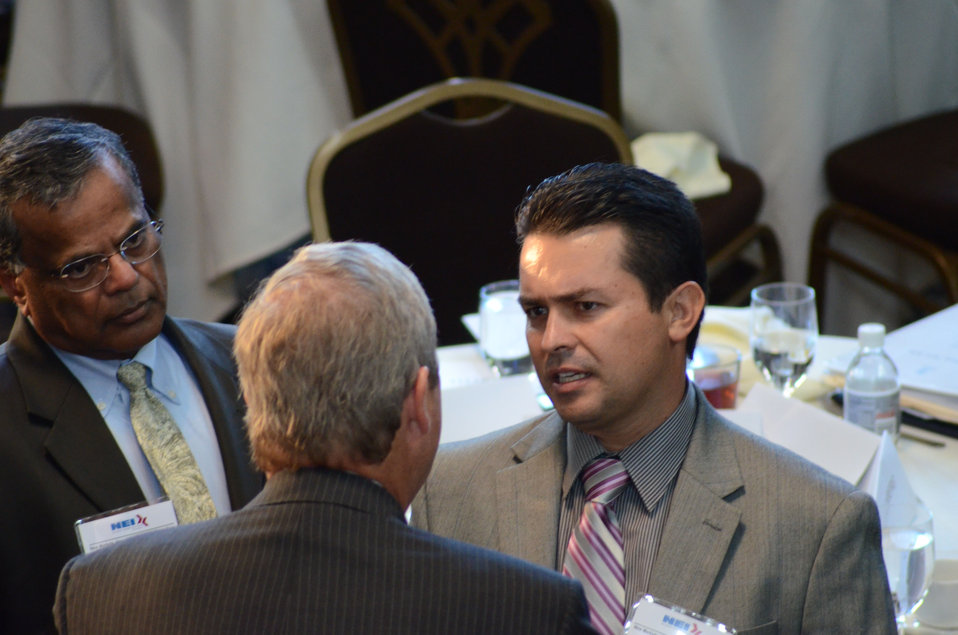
Members of the audience talk to Agriculture Secretary Tom Vilsack speak at the National Export Initiative (NEI) Small Business Tour in Milwaukee, WI, on Wednesday, August 3, 2011. An important goal of the NEI is to provide additional assistance to small and medium-sized businesses, which are major drivers of job creation. The NEI is assisting small and medium-sized businesses win more foreign government contracts, find buyers worldwide, participate in more trade missions and trade shows, receive more export financing, and learn new ways to sell products and services overseas.